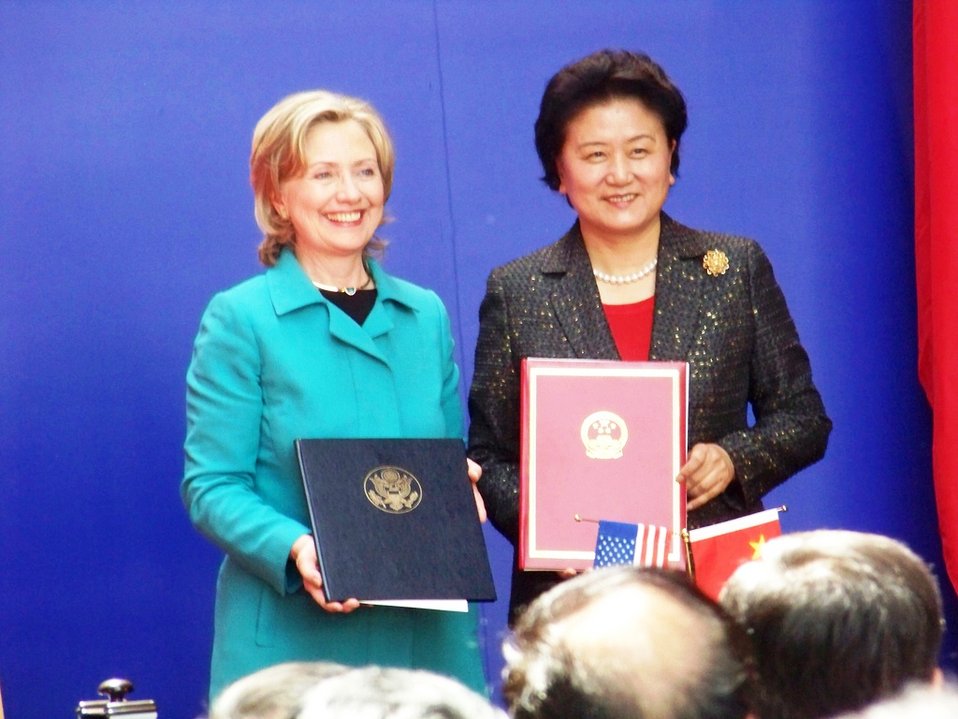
Secretary Clinton and Chinese State Councilor Liu Yandong Smile After Signing Agreement

U.S. Secretary of State Hillary Rodham Clinton and Chinese State Councilor Liu Yandong smile as they pose for photos following their signing of the U.S.-China Consultation on People-to-People Exchange agreement at the National Center for the Performing Arts in Beijing, China, May 25, 2010.